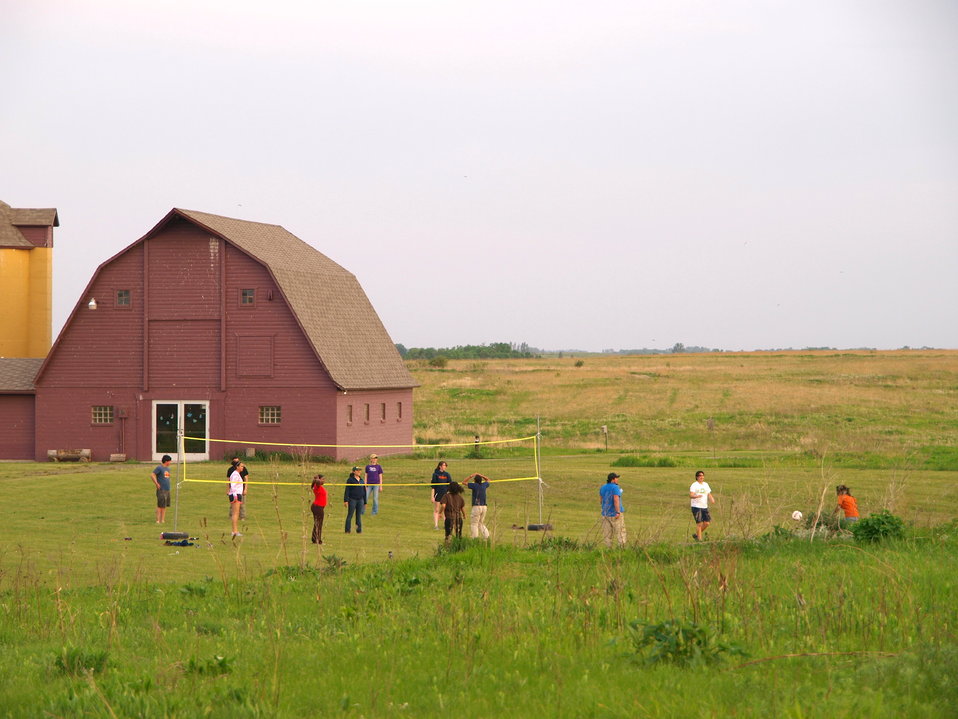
CDIP 2012 Fergus Falls

Bonding in the field